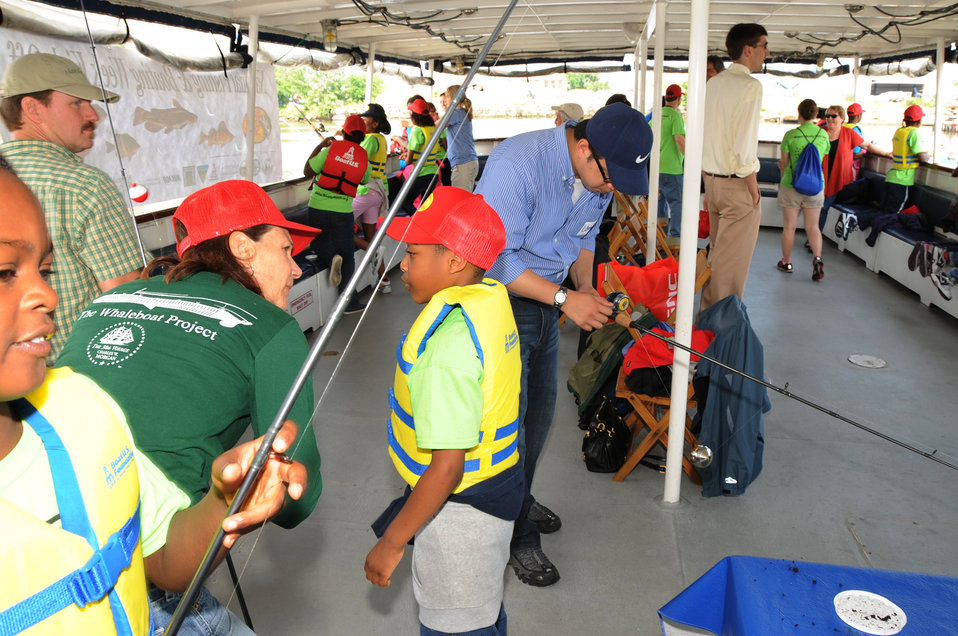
2013 National Fishing and Boating Week

Local students prepare to enjoy fishing at the annual kick-off of National Fishing and Boating Week on the Anacostia River in Washington D.C.